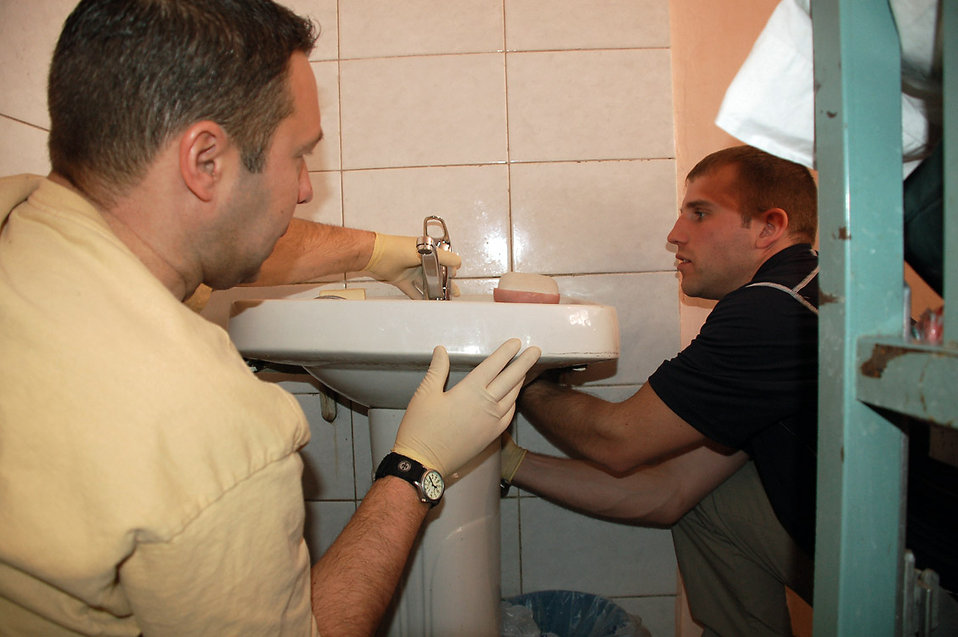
Manas Airmen tend to children's cancer center needs

Tech. Sgt. Thomas Pettit (left) and Staff Sgt. Shawn Lundgren install a new faucet Feb. 25 at Kyrgyzstan's sole Children's Cancer Hospital in Bishkek. Manas Air Base, Kyrgyzstan volunteers visited with the children and replaced 10 old faucets with new ones. Sergeant Pettit is assigned to the 376th Expeditionary Medical Group and is deployed from Beale Air Force Base, Calif. He is originally from Fort Wayne, Ind. Sergeant Lundgren is assigned to the 376th Expeditionary Civil Engineer and is deployed from McChord AFB, Wash. He is originally from Reardon, Wash.